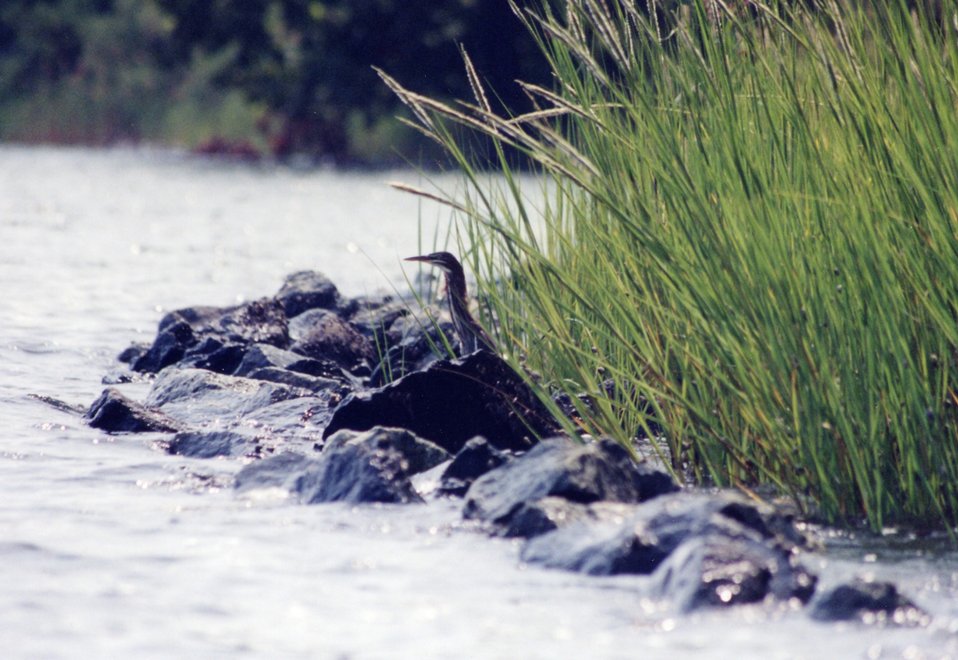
Green heron in alert, ready-to-take-flight mode.